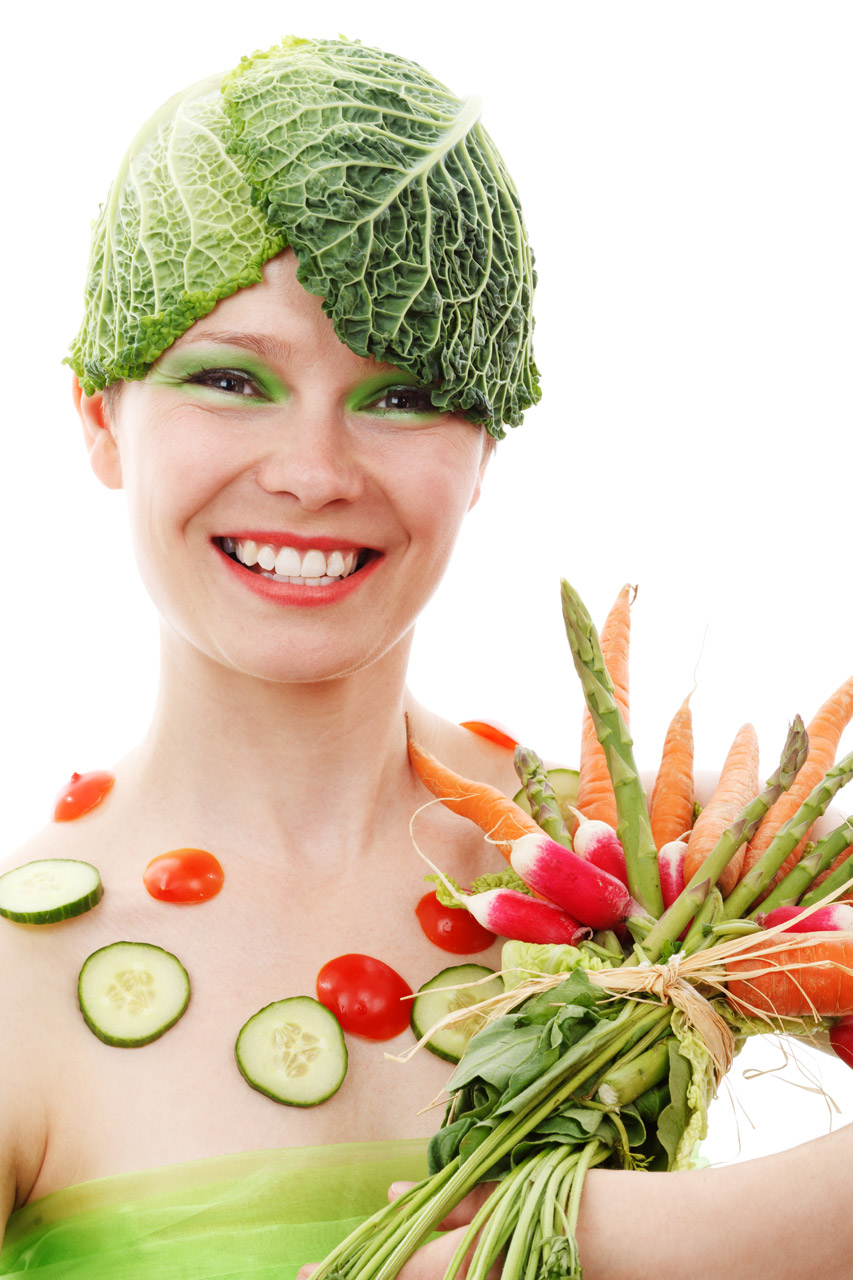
Woman wearing vegetable

Young woman (jana svojsova) wearing colorful vegetable isolated on white background.